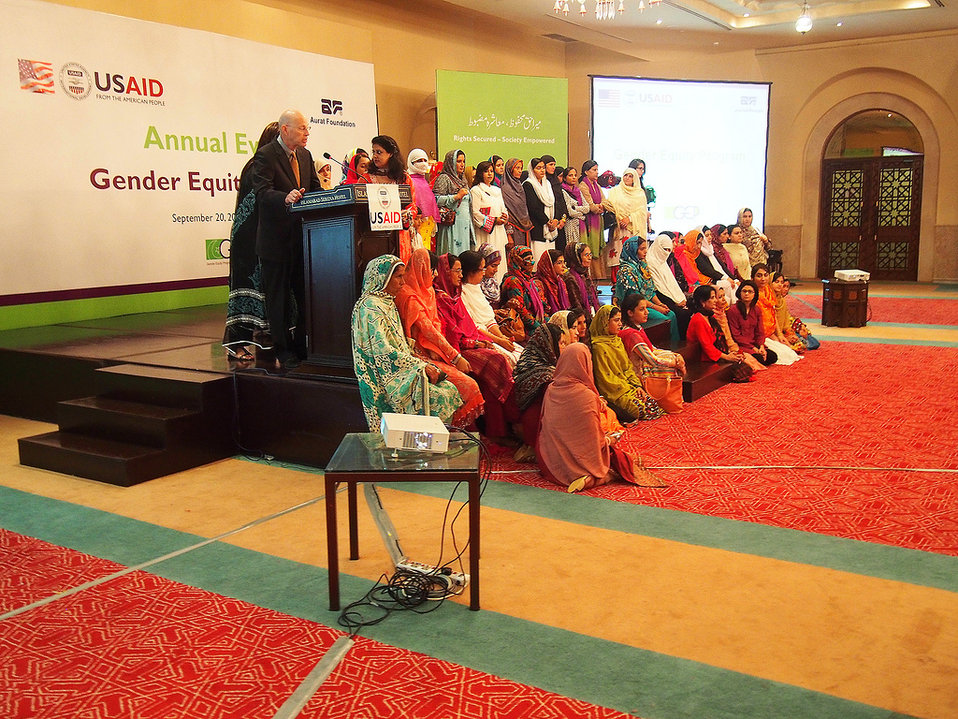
Gender Equity Program, Pakistan

USAID and Aurat Foundation annual event in Islamabad, Sept. 20, 2013